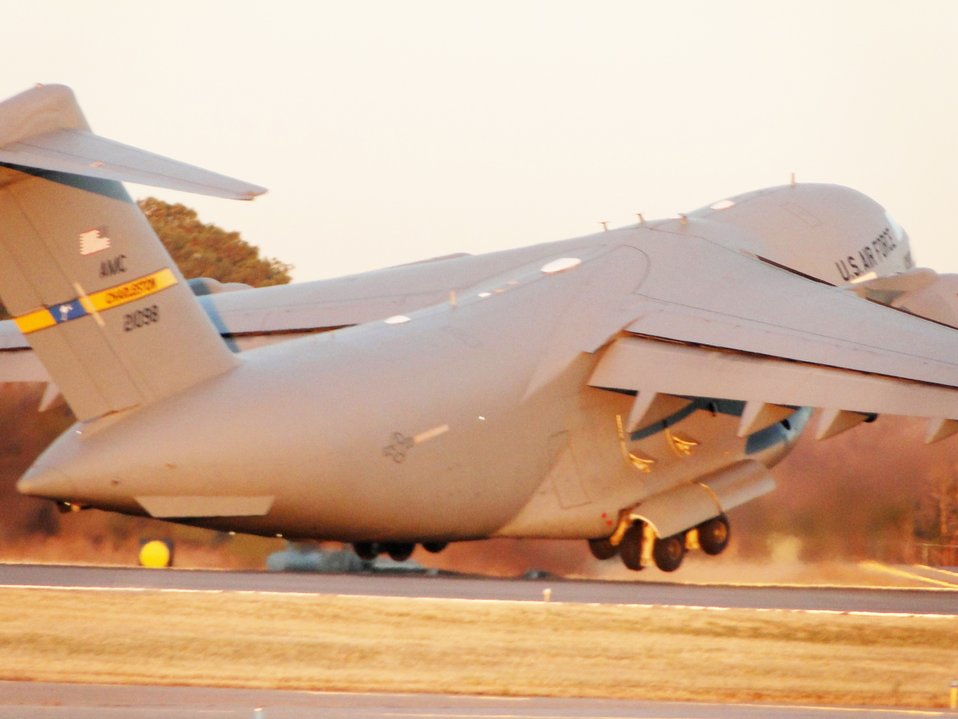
Local FEMA heads to Haiti to aid humanitarian mission

A C-17 Globemaster III takes off from Chambers Field, Naval Station Norfolk, Va., Jan. 15, 2010. The C-17 carried cargo and members of Virginia Task Force 2, a Federal Emergency Management Agency urban search and rescue team based in Virginia Beach, Va., to support ongoing relief operations in earthquake-stricken Haiti. The C17 is assigned to the 437th Airlift Wing at Charleston Air Force Base, S.C.